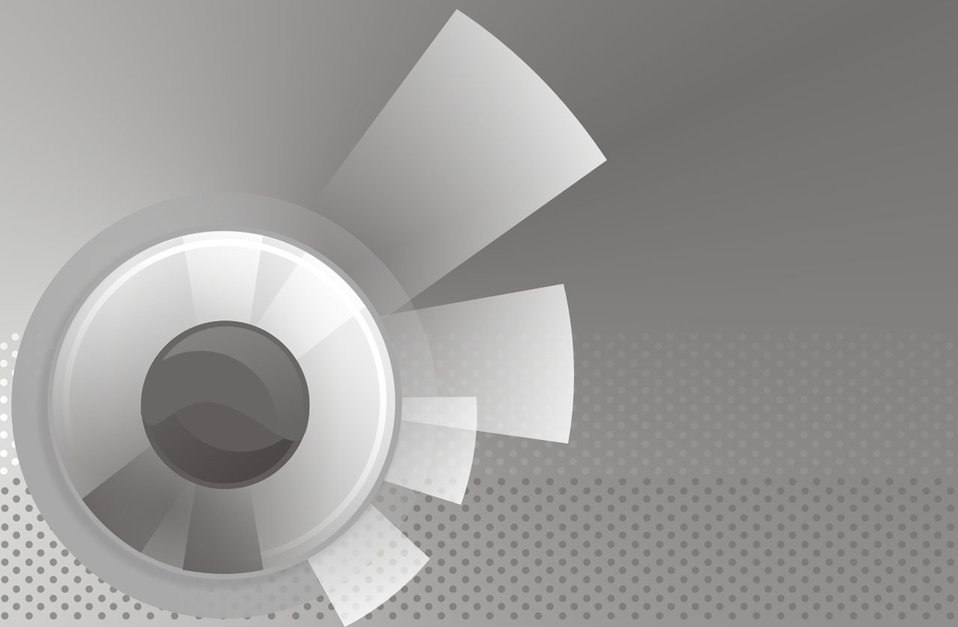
Weird grey object

Grey background with dots.